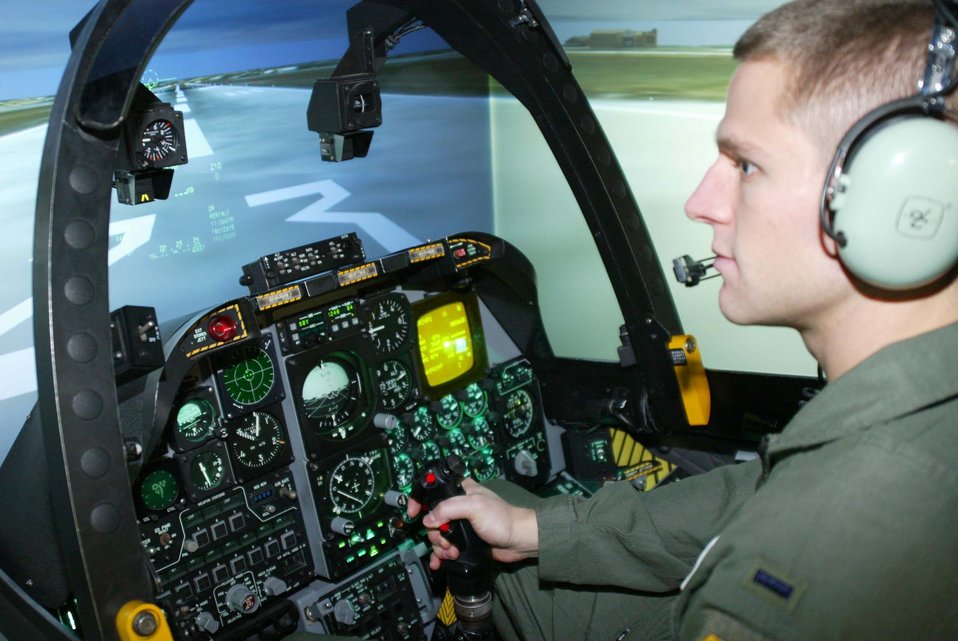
Virtual Red Flag

POPE AIR FORCE BASE, N.C. (AFPN) -- 1st Lt. Joden Werlin settles into the A-10 simulator before participating in Virtual Red Flag, a multi-base, joint operational training exercise. Lieutenant Werlin is assigned to 75th Fighter Squadron.